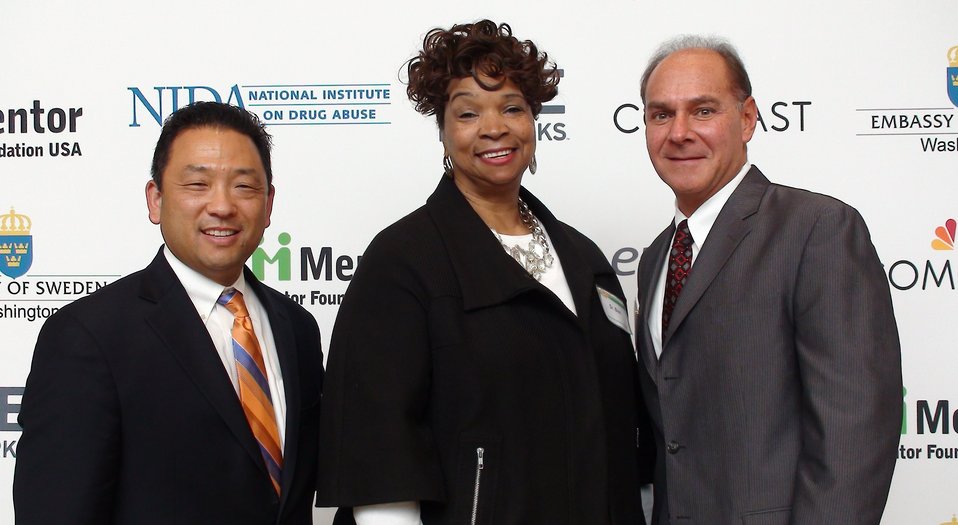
NIDA and Mentor during NDFW 2013

Washington, D.C., right to left, NIDA representative Brian Marquis, motivational speaker, Dr. Lonise Bias, and Deputy Director of Demand Reduction for the White House, David Mineta during Mentor's Drug Facts Day at the House of Sweden, Jan. 30, 2013.